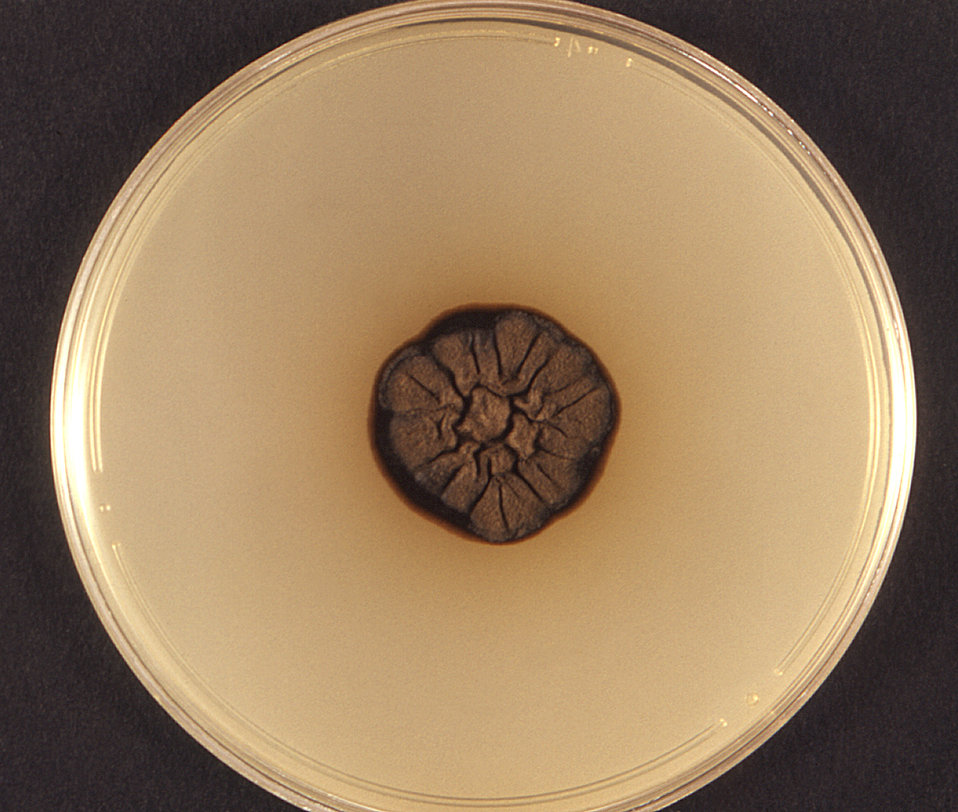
From a frontal view, this photograph depicts a single colony of Ochroconis humicola, fungi, formerly known as Scolecobasidium humicola, which had been isolated from a specimen of infected fish.